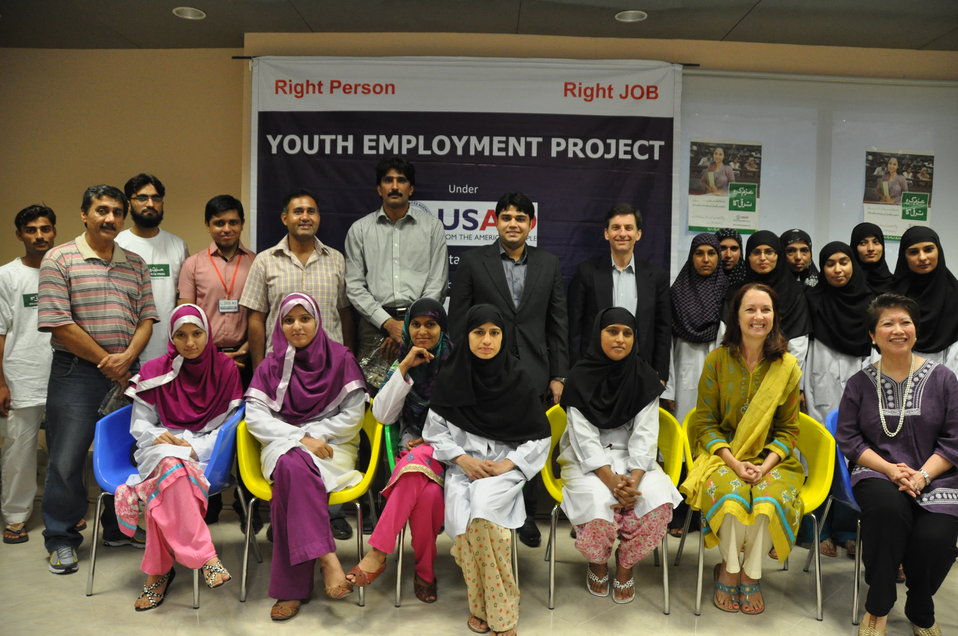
USAID Jobs Program